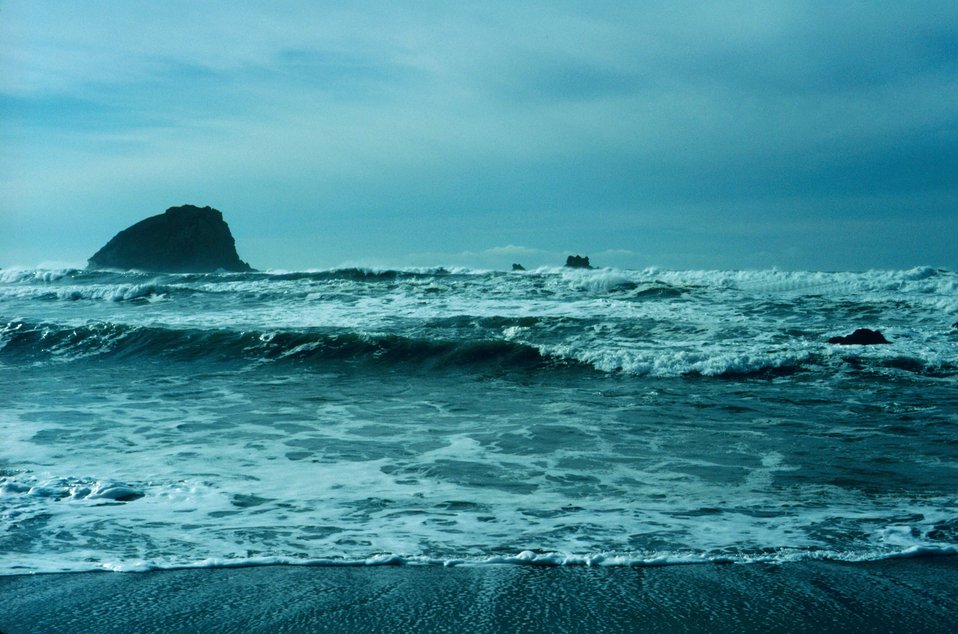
Probably northern California or southern Oregon